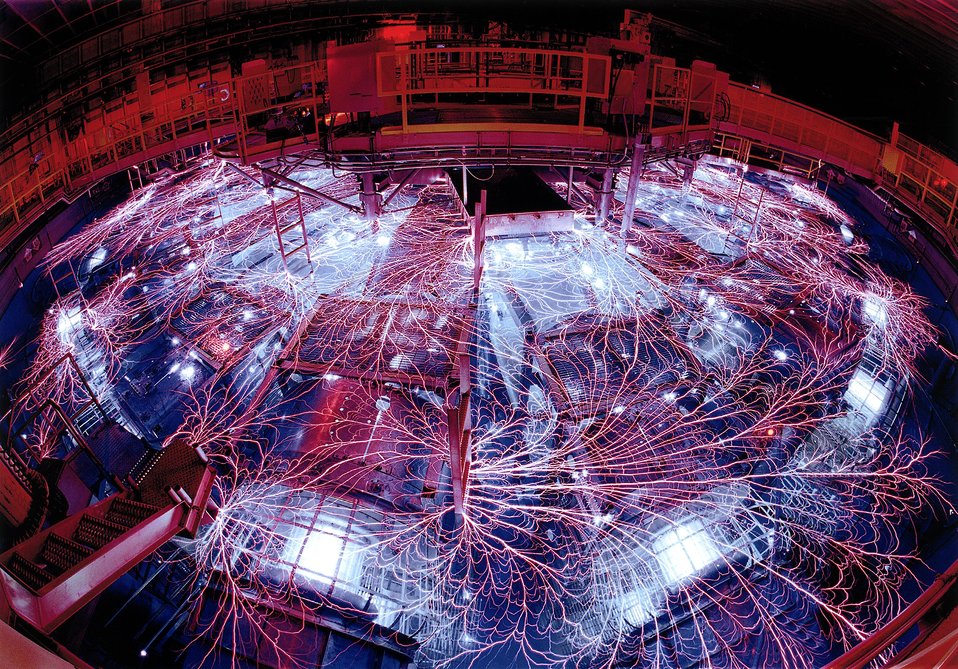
SANDIA NATIONAL LABORATORY'S Z ACCELERATOR, A PULSED POWER FACILITY IN OPERATION.

A TIME-EXPOSURE PHOTOGRAPH OF ELECTRICAL FLASH-OVER ARCS PRODUCED OVER THE SURFACE OF THE WATER IN THE ACCELERATOR TANK AS A BYPRODUCTS OF Z OPERATION. THESE FLASH-OVERS ARE MUCH LIKE STROKES OF LIGHTNING. THE Z PULSED POWER ACCELERATOR AT SANDIA, WHICH BEGAN OPERATING IN SEPTEMBER, 1996, IS THE WORLD'S MOST POWERFUL AND EFFICIENT LABORATORY X-RAY SOURCE. IT IS A MODIFIED VERSION OF THE PBFA II ACCELERATOR WHICH WAS USED UNTIL 1996 FOR LIGHT ION FUSION RESEARCH.